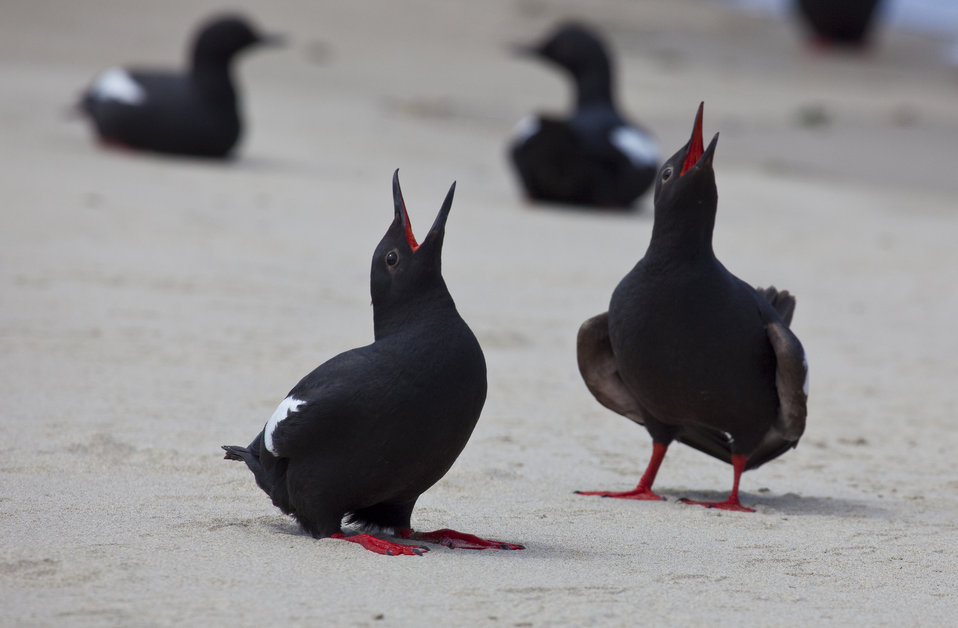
Pigeon Guillemots' courtship display

Male and female pigeon guillemots in courtship display. Guillemots breed within Oregon Islands and Three Arch Rocks National Wildlife Refuge